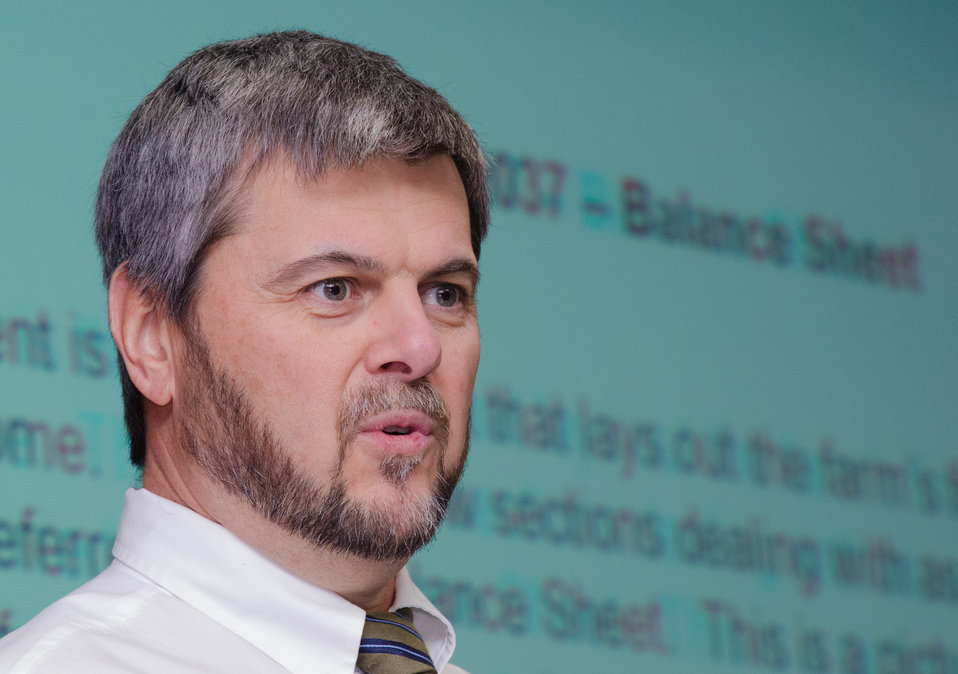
U.S. Department of Agriculture (USDA) Farm Service Agency Farm Loan Programs Chief Pete Adamson spoke with farmers participating in the “Virginia State University (VSU), USDA and Virginia Farmers Working Together” outreach workshop in the VSU, L. Douglas Wilder building on Thursday, March 7, 2013, in Petersburg, VA. Farmers shared and learned new ways to do more with USDA services, and how to apply for programs that will help grow their business.